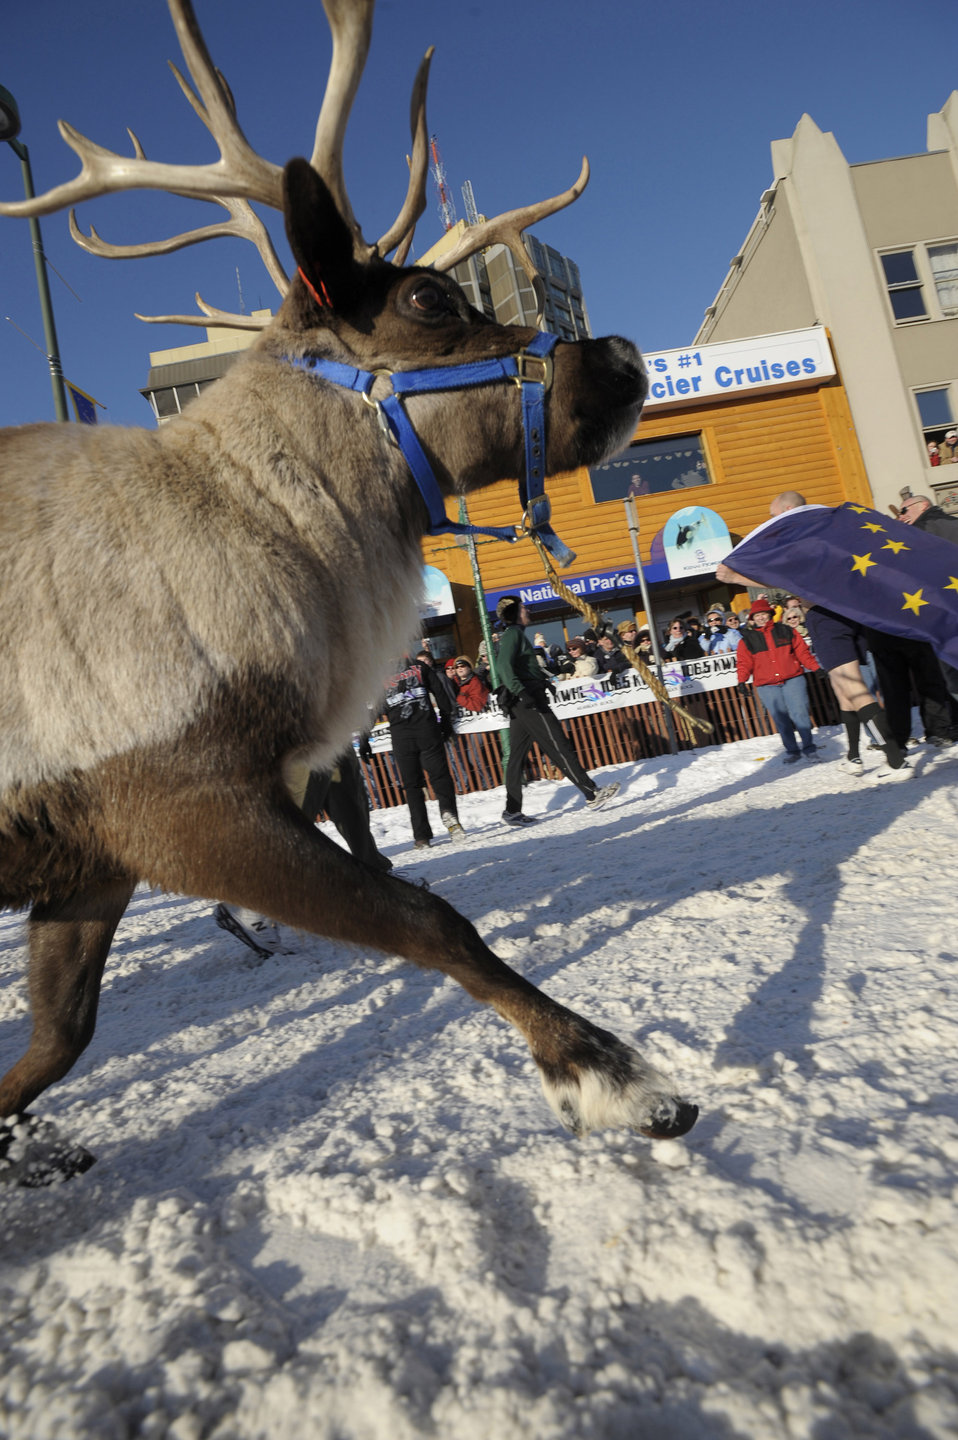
Santa's other reindeer

Reindeer race down the streets of Anchorage during the 2nd Annual Running of the Reindeer March 1 in Alaska. Colonel Eric Overture, an F-22 Raptor pilot and 477th Fighter Group commander at Elmendorf Air Force Base, Alaska, ran the two city blocks with the reindeer and was able to avoid the reindeer's antlers.